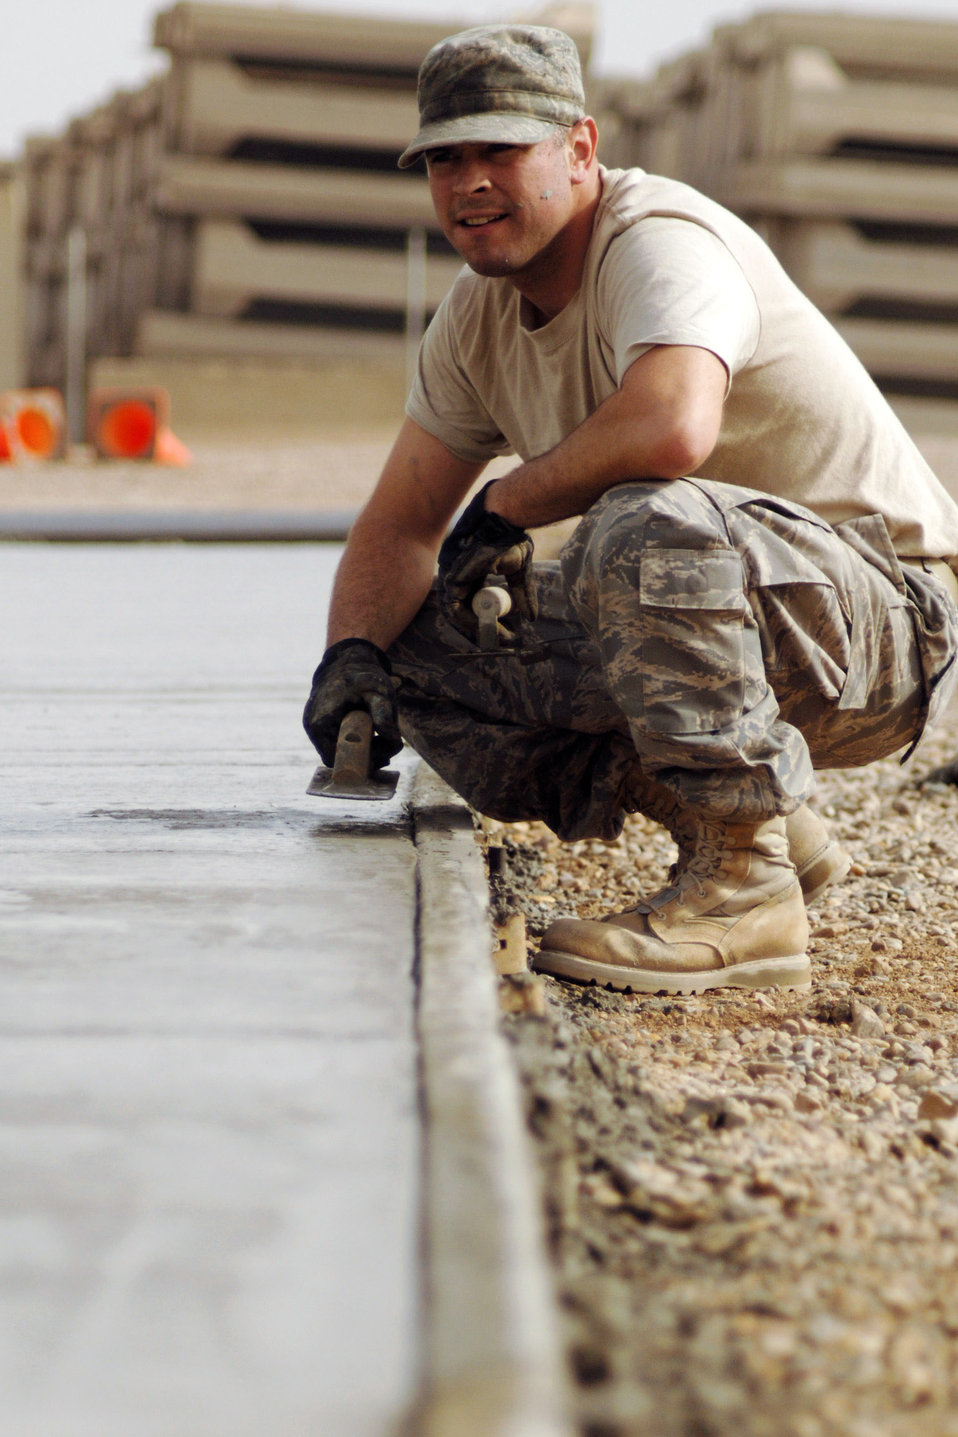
Set in stone

Staff Sgt. Ralph Keller takes a moment to observe his work Feb. 15 after helping lay a slab of concrete during a construction project at Joint Base Balad, Iraq. Sergeant Keller, a native of Pittsburgh, is a pavement and construction equipment operator with the 332nd Expeditionary Civil Engineer Squadron and is deployed from Hickam Air Force Base, Hawaii.